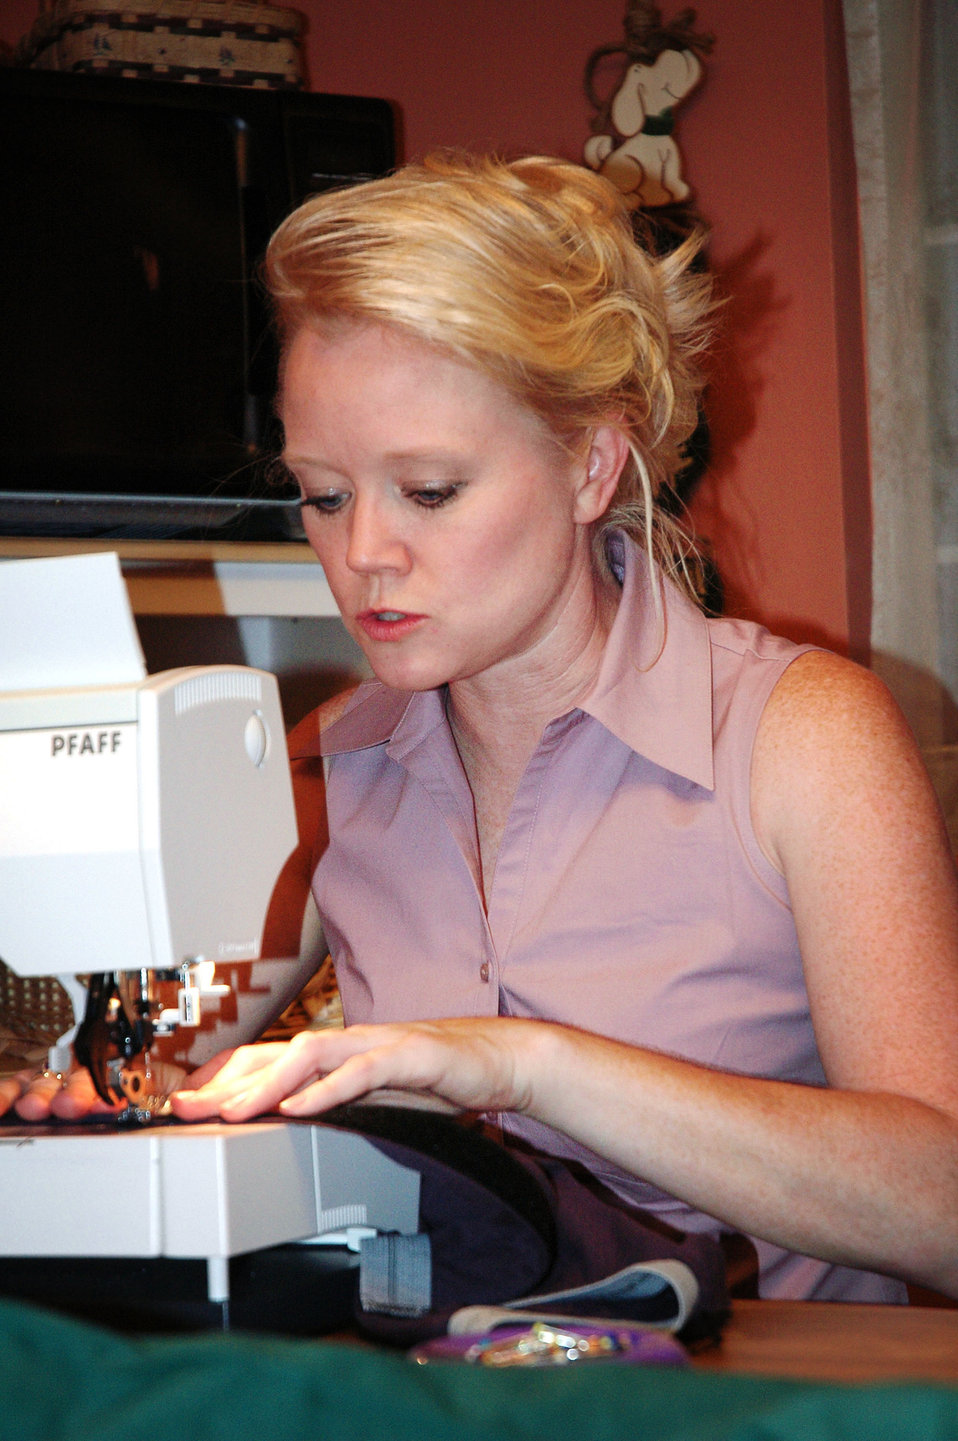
Volunteers give comfort by sewing

ALEXANDRIA, Va. -- Maj. Sandra Edens attaches a fabric fastener to a pair of shorts.